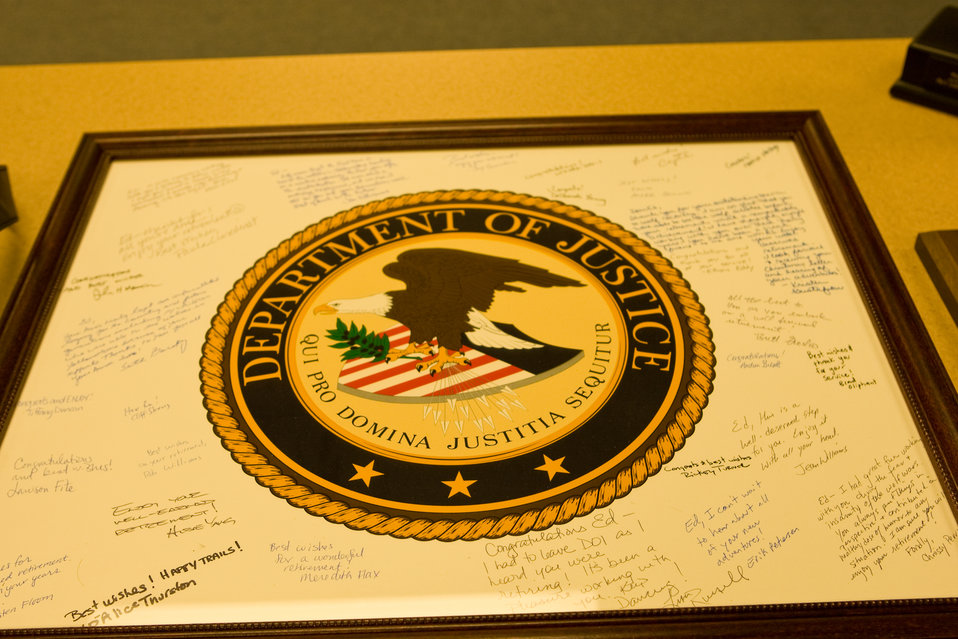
Department of Justice Seal

On May 23rd, 2011 The U.S. Fish and Wildlife Service Mountain-Prairie Region honored three of the most influential individuals in wolf recovery in the Northern Rocky Mountains: Ed Bangs, Steve Fritts, and Margot Zallen. Ed Bangs started the event with an hour-long presentation, “Wolf Conservation: The Good, The Bad, and The Ugly.”

Following the presentation, Regional and National leadership recognized the imminent retirement of Ed, Steve, and Margot with a variety awards for their contributions.